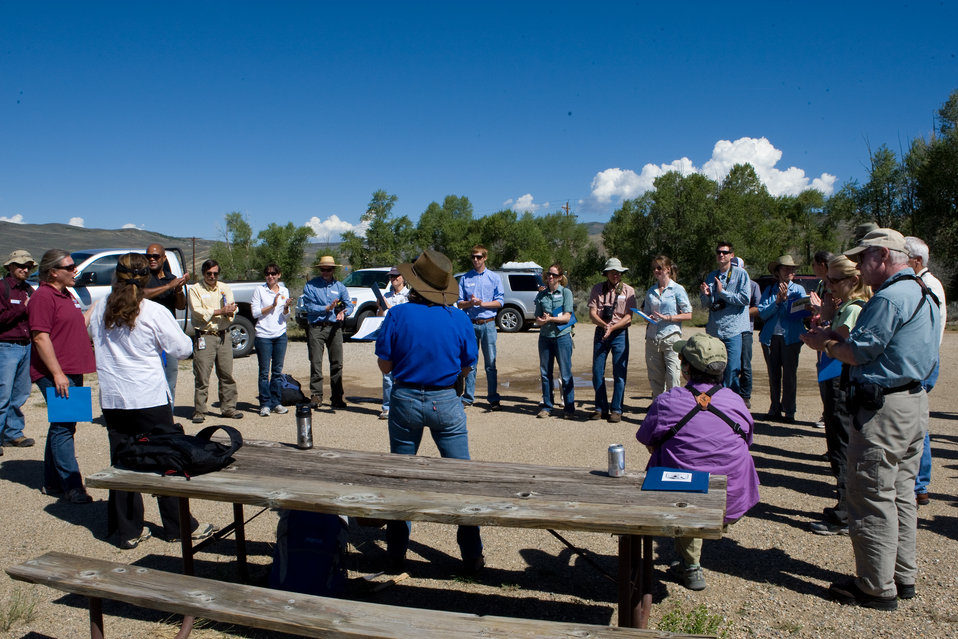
Colorado Rare Plant Conservation Initiative

The Colorado Rare Plant Conservation Initiative (RPCI) is a partnership of 23 statewide and regional agencies, private organizations, and academic institutions working to conserve 121 rare plants in Colorado. As part of these efforts the group developed the Colorado Rare Plant Conservation Strategy, developed Best Management Practices to reduce energy development impacts, addressed climate change, and developed focused strategies for the conservation of individual species at eight priority landscapes. The group has also worked to coordinate volunteer efforts for plant conservation across the state.